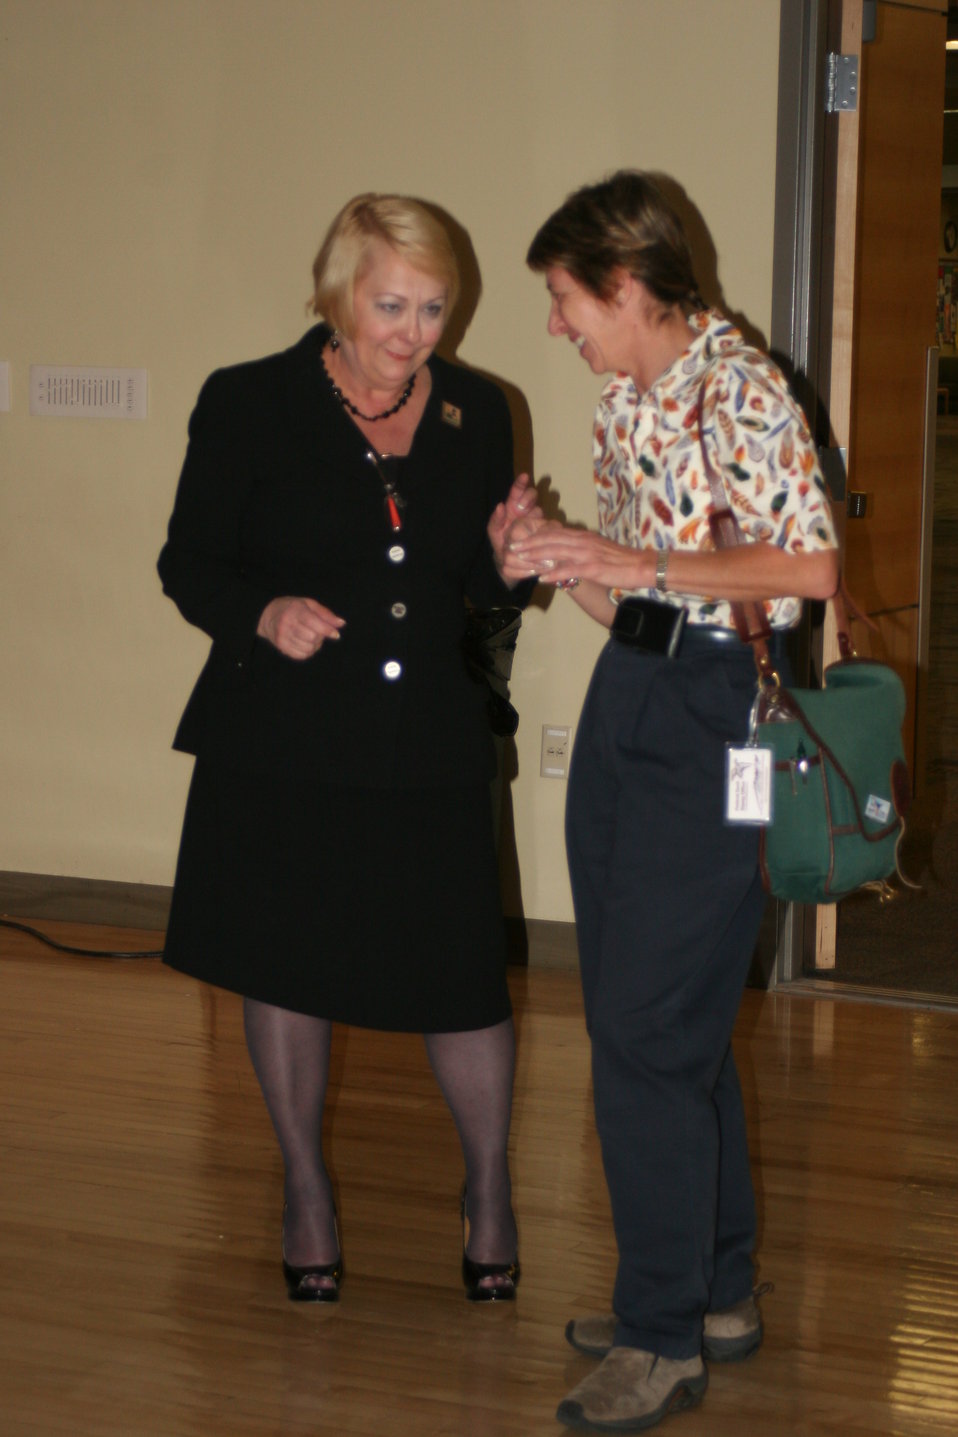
Staff

Photo Credit: Suzanne Fellows / USFWS
The U.S. Fish & Wildlife Service sponsored the 2012 Federal Duck Stamp Art Contest September 28 and 29 in Ogden, Utah, at Weber State University. A panel of five judges was responsible for choosing the art work used to design the 2013-2014 Migratory Bird Hunting and Conservation Stamp.